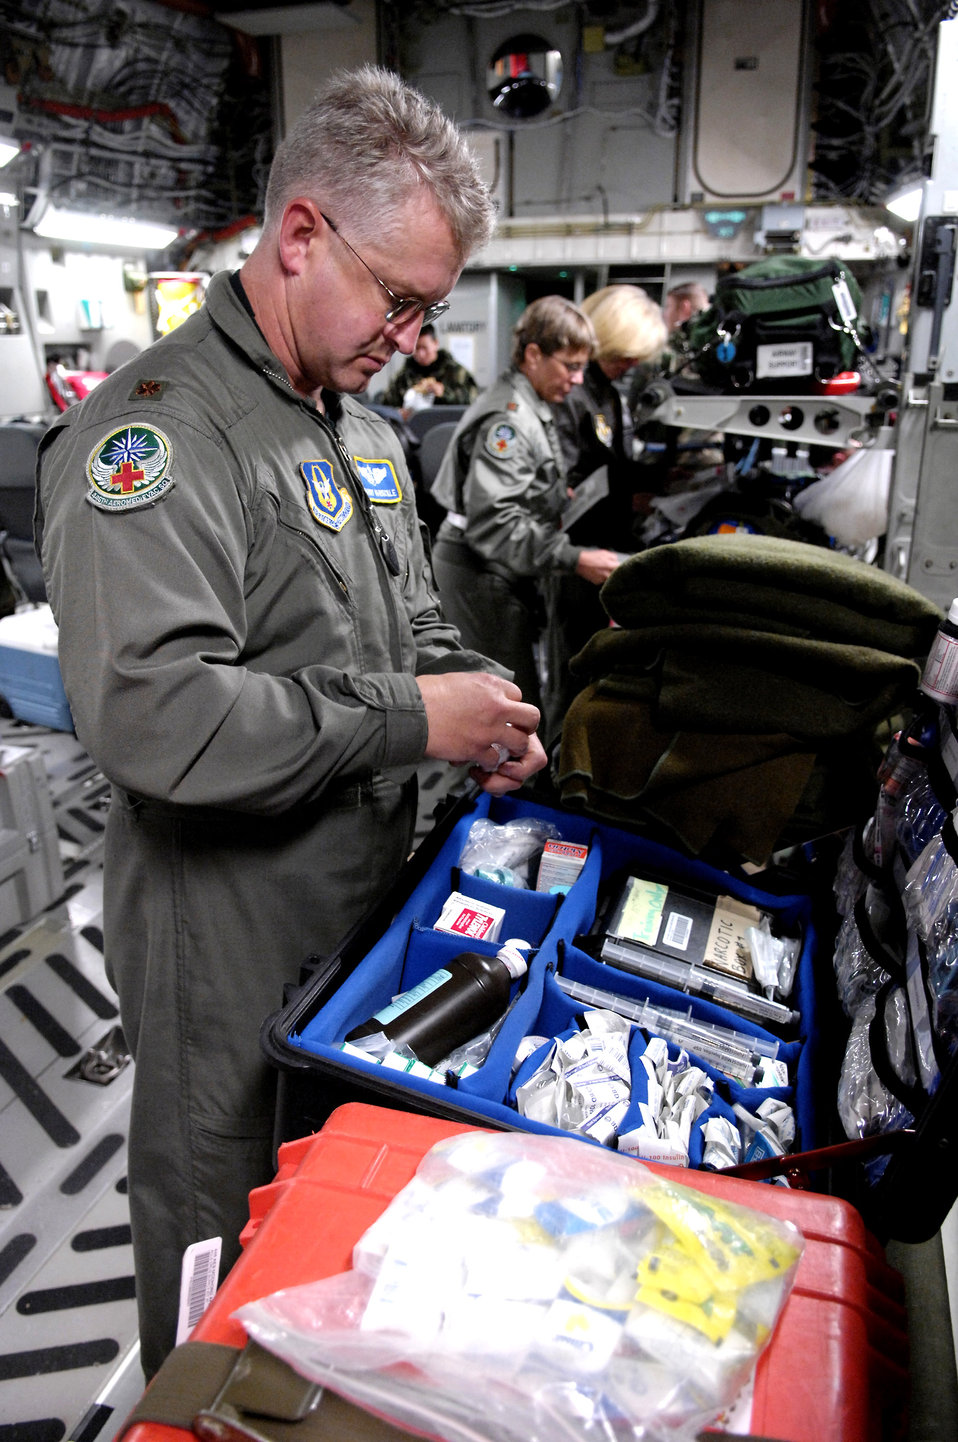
McChord C-17 crew flies medevac mission out of Antarctica

Maj. Barry Vansickle inventories medical supplies on a C-17 Globemaster III before taking off on a medical evacuation mission to Antarctic Aug. 28 from Christchurch, New Zealand. Major Vansickle is assigned to the 446th Aeromedical Evacuation Squadron from McChord Air Force Base, Wash. The medical evacuation mission was flown for a patient who required more definitive medical treatment than can be handled in Antarctica.